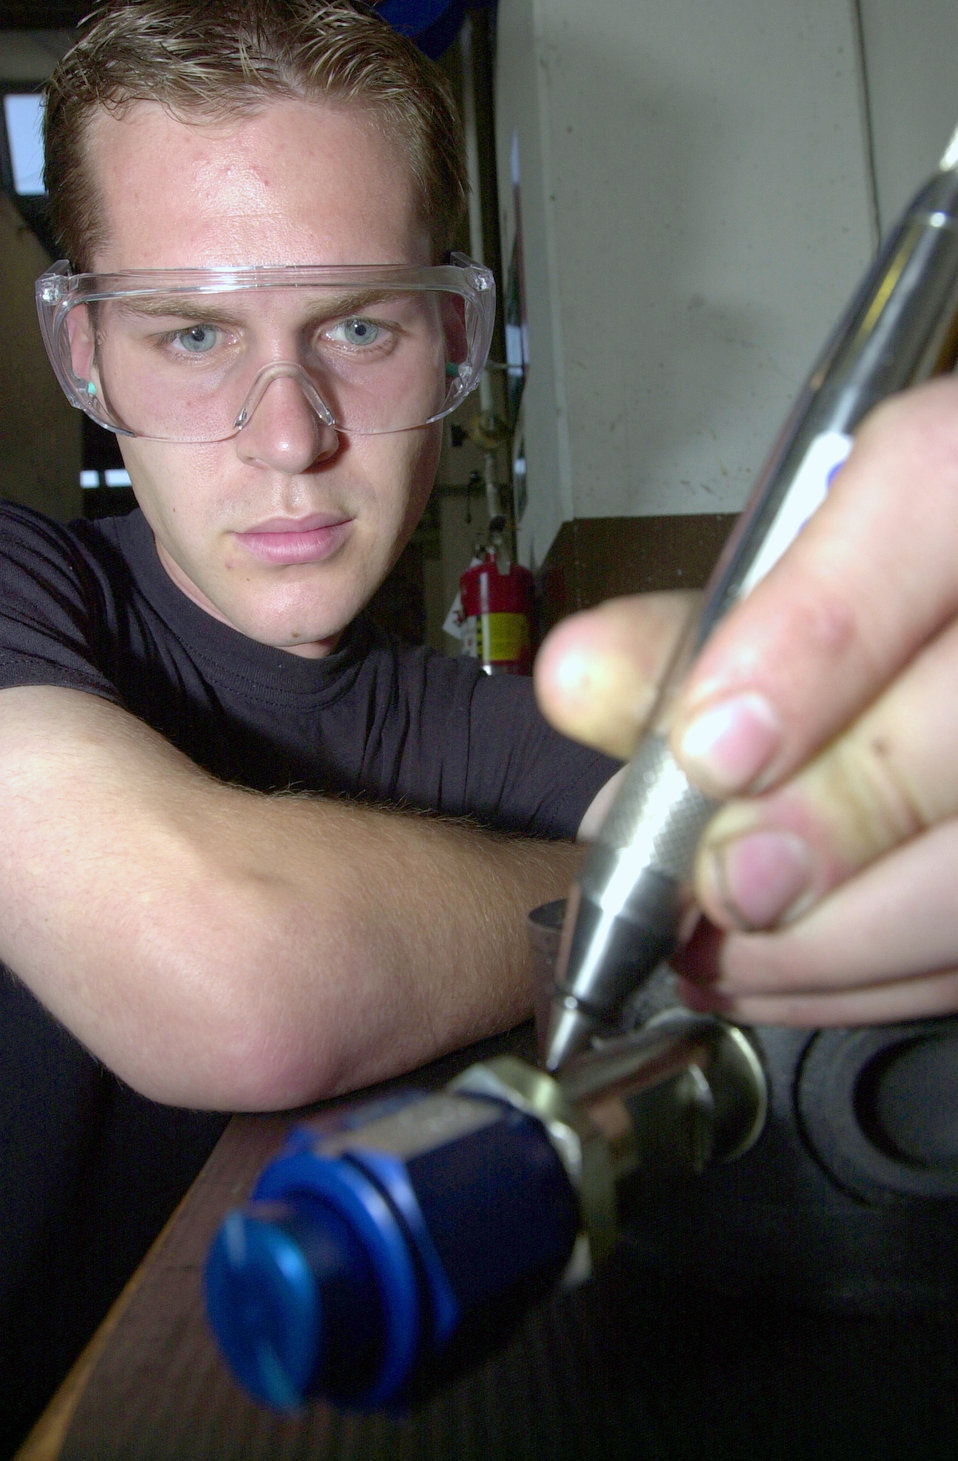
AGE etching

AVIANO AIR BASE, Italy -- Airman 1st Class Zach Stimmler etches identification numbers onto pressure-gauge instruments during routine maintenance here May 30. Stimmler is an aerospace ground equipment apprentice.